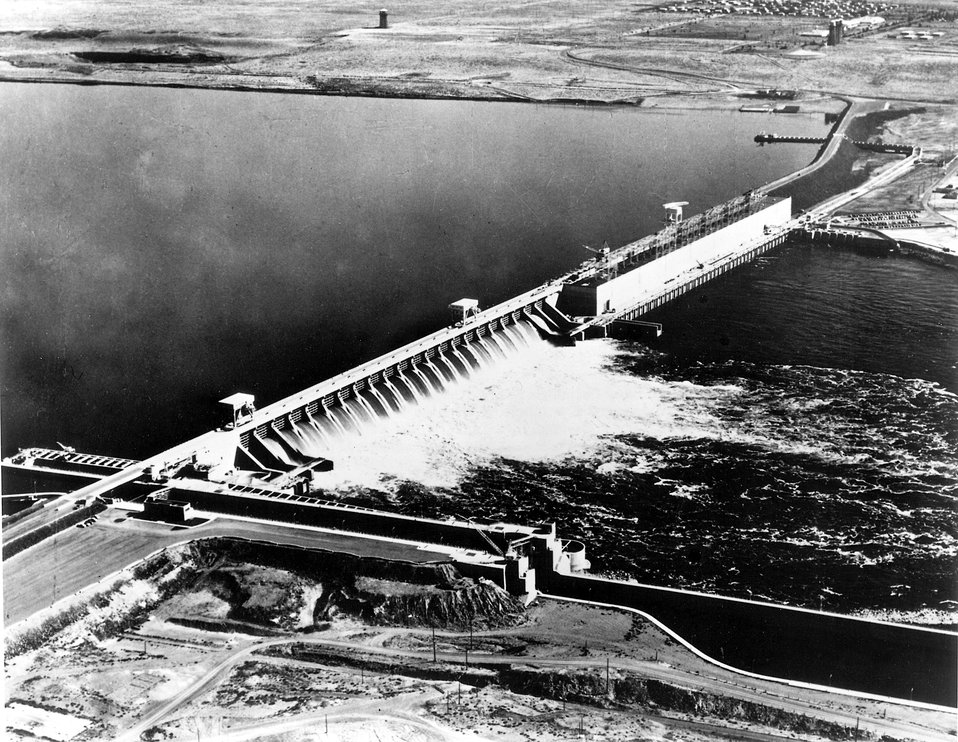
McNary Dam, Columbia River, Oregon and Washington, showing the rushing water of Gold Creek. c. undated